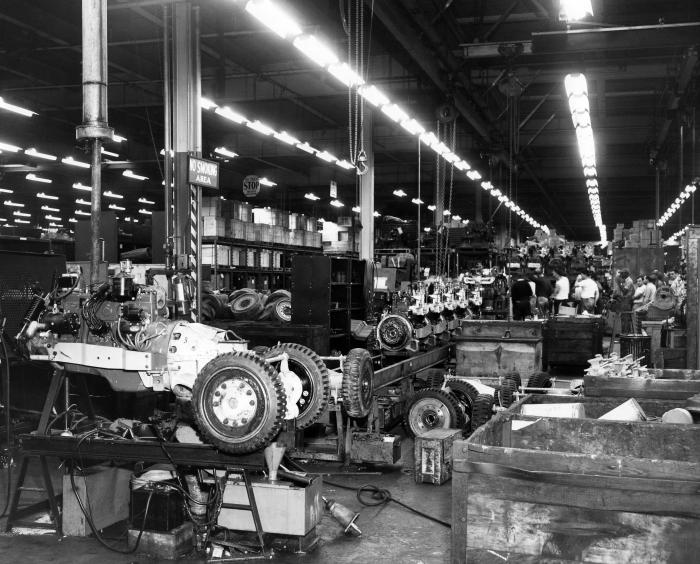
This historic image, provided by the Center for Disease Control's (CDC), National Institute for Occupational Safety and Health (NIOSH), was shot on the floor of a Yale Towne Mfg. Co., vehicle assembly plant. Though technologic advancements made many of the formerly manual tasks easier, and faster, the potential dangers lurking inside such a factory, still mandated, and mandates even today, the adherence to strict protocols in order to create a safer working environment.In gaining a better understanding of workplace hazards, through hands-on and on-site information acquisition, protocol-formulating bodies such as NIOSH, are better able to create a safer workplace through substantiation of appropriate safety regulations.